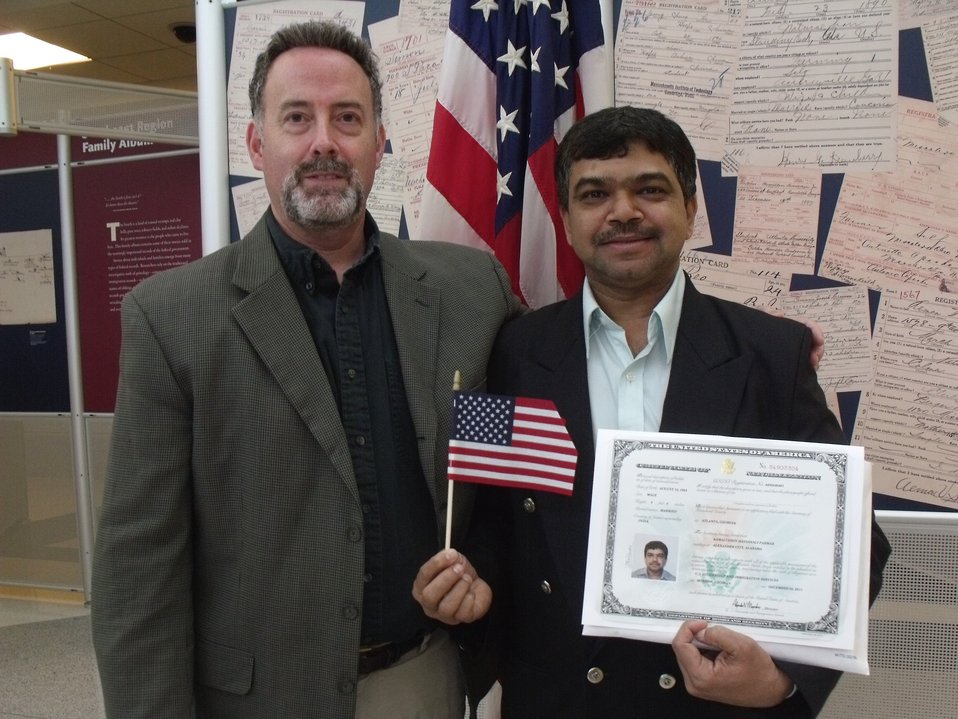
New Citizens